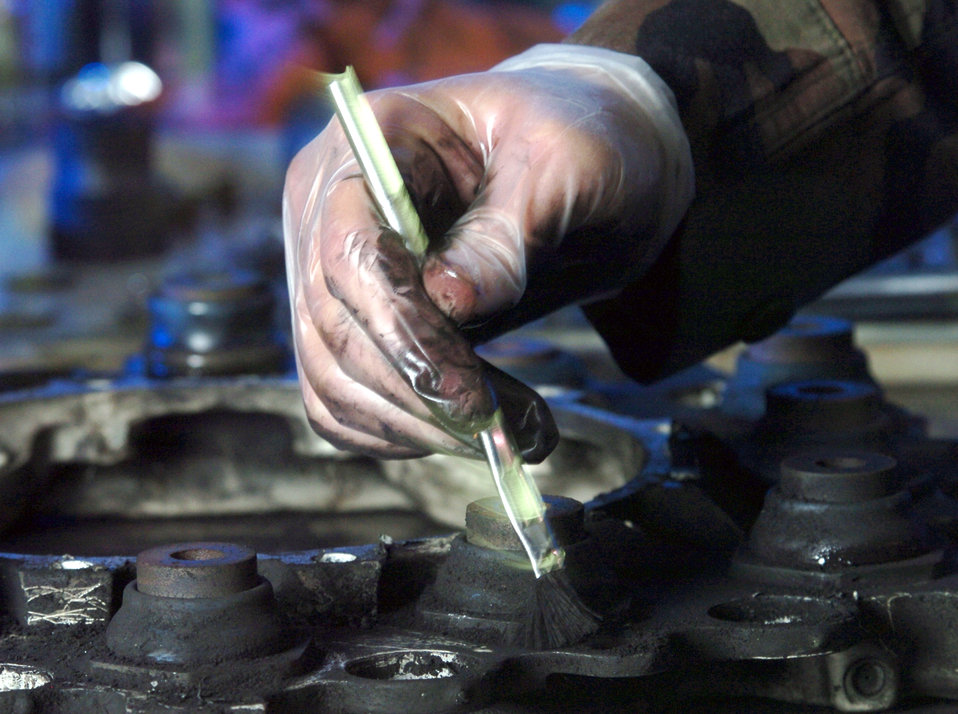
Gimme a brake

YOKOTA AIR BASE, Japan -- Staff Sgt. James Christner cleans a C-130 Hercules brake assembly carrier during an inspection here. The Airmen of the 374th Maintenance Squadron's pneudraulics element overhaul, modify and test all pneudraulics components of C-130s assigned and in-transit here.